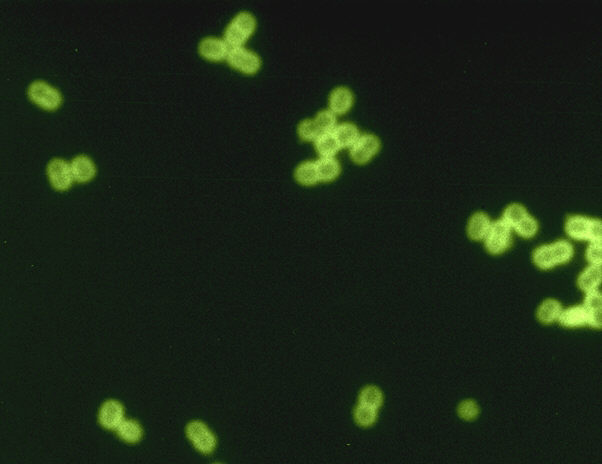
Streptococcus pneumoniae in spinal fluid. FA stain (digitally colorized).